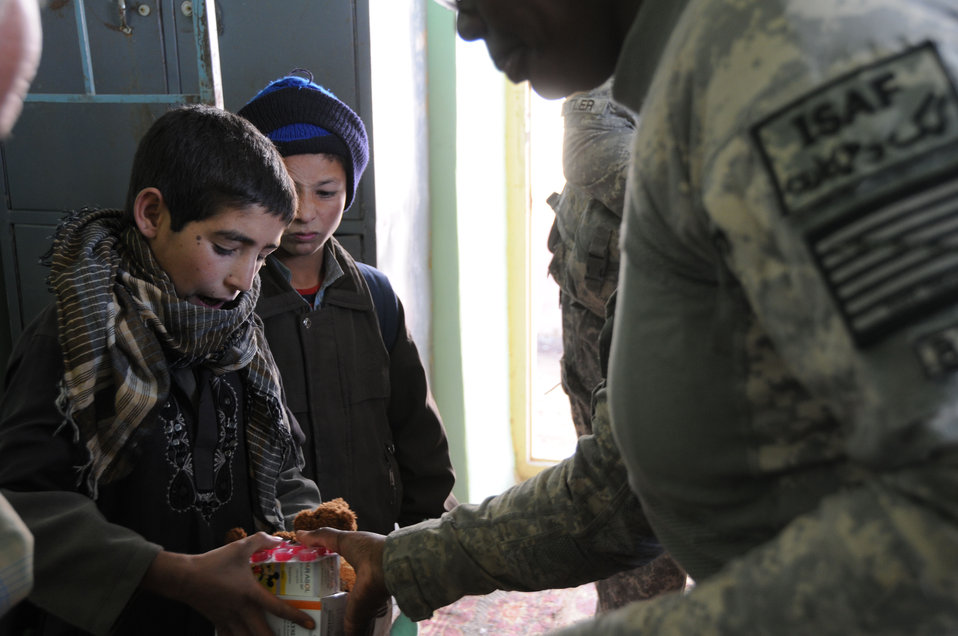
Taking care of locals

HM2 Biza Strickland, from the Naval Medical Center, Portsmouth, Va., NCOIC of the Provincial Reconstruction Team Ghazni Clinic, hands out cough syrup and de-worming medication to a child inside the orphanage clinic in Ghazni City, Afghanistan on Dec. 16, 2009.